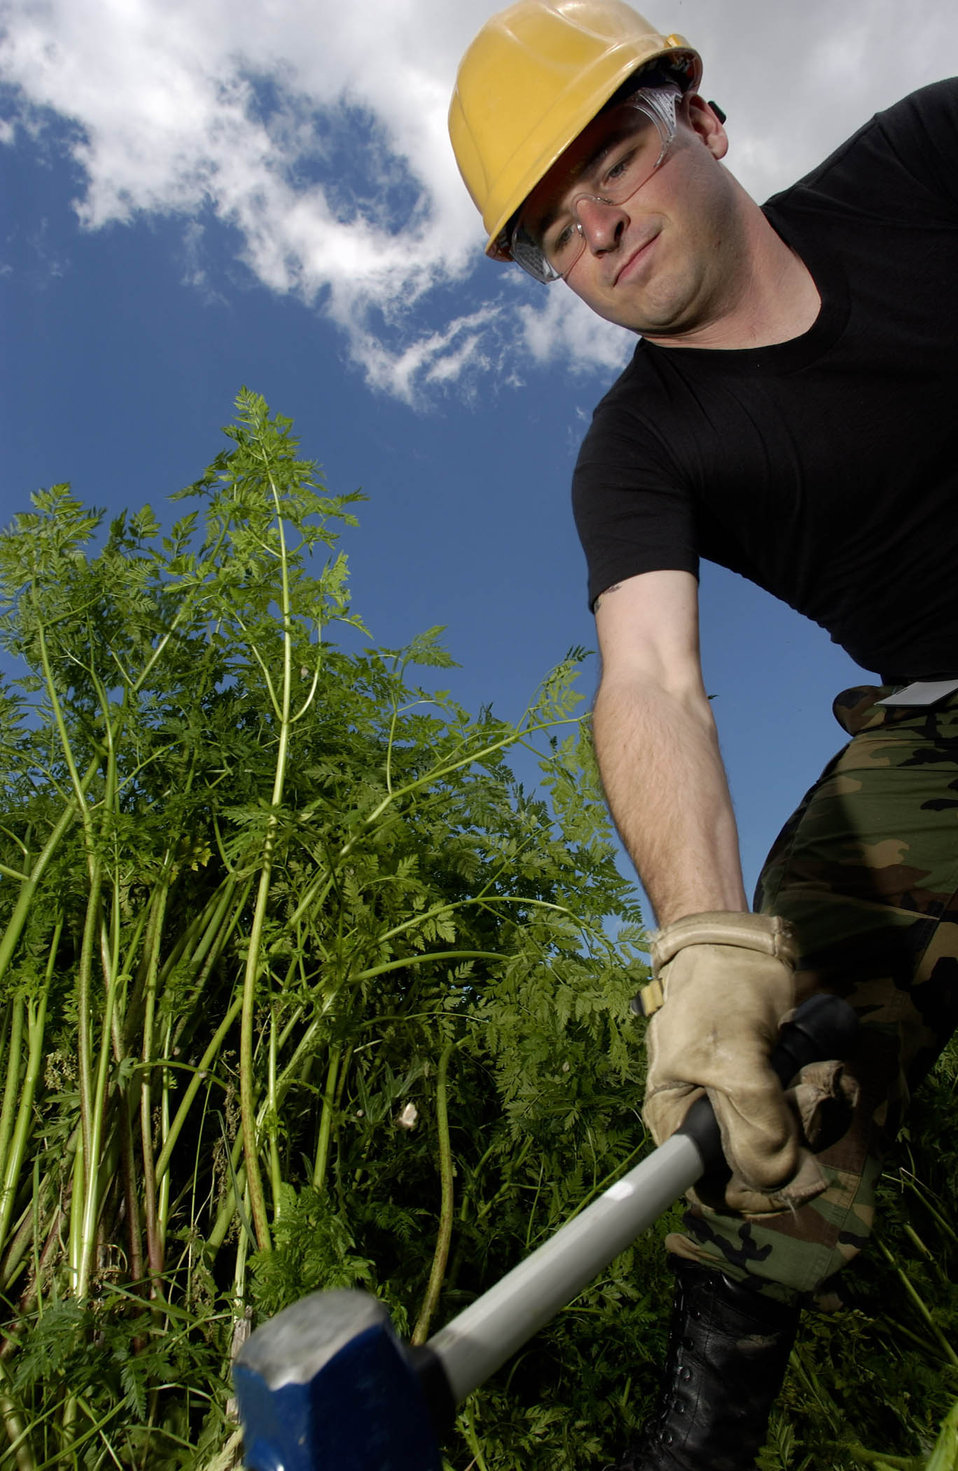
Airmen prepare Romanian base for exercise

MIHAIL KOGALNICEANU AIRFIELD, Romania -- Senior Airmen Neal Bridges pounds a stake into the ground here while building a 50-foot mast for exercise Combined Endeavor 2005. Airmen with the 1st Combat Communications Squadron are preparing equipment to test communications systems among 1,200 servicemembers and civilians from more than 43 countries.